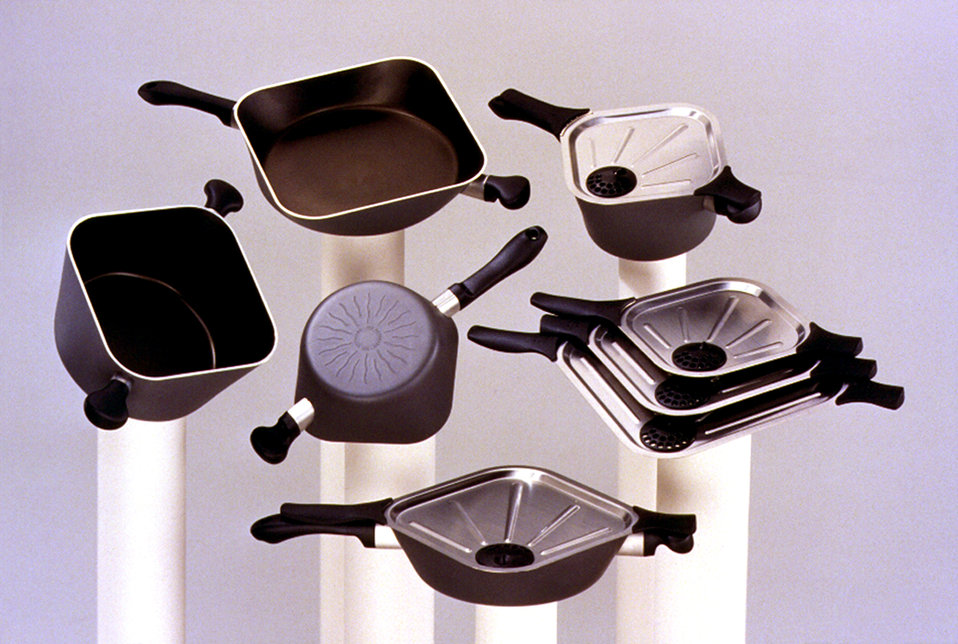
This was one of six images (PHIL# 9125 - 9130) depicting an Allegro� Cookware pot by Mirro�, the design of which was a radical departure from traditional cooking utensils. The square shape, unique lid and lightweight materials offered many ergonomic advantages. All the pots, pans and skillets were circular on their bottoms, gradually becoming square toward their tops. This cookware design made the most efficient use of standard round heat sources while at the same time offered greater cubic volume than a circular pot of the same height. Two of the corners created natural pouring spouts, a design consideration that was implemented in response to complaints common with more traditional round cookware. Handles located on the alternate two corners of the pot, aligned and interlocked with the lid handles providing safe and balanced handling.